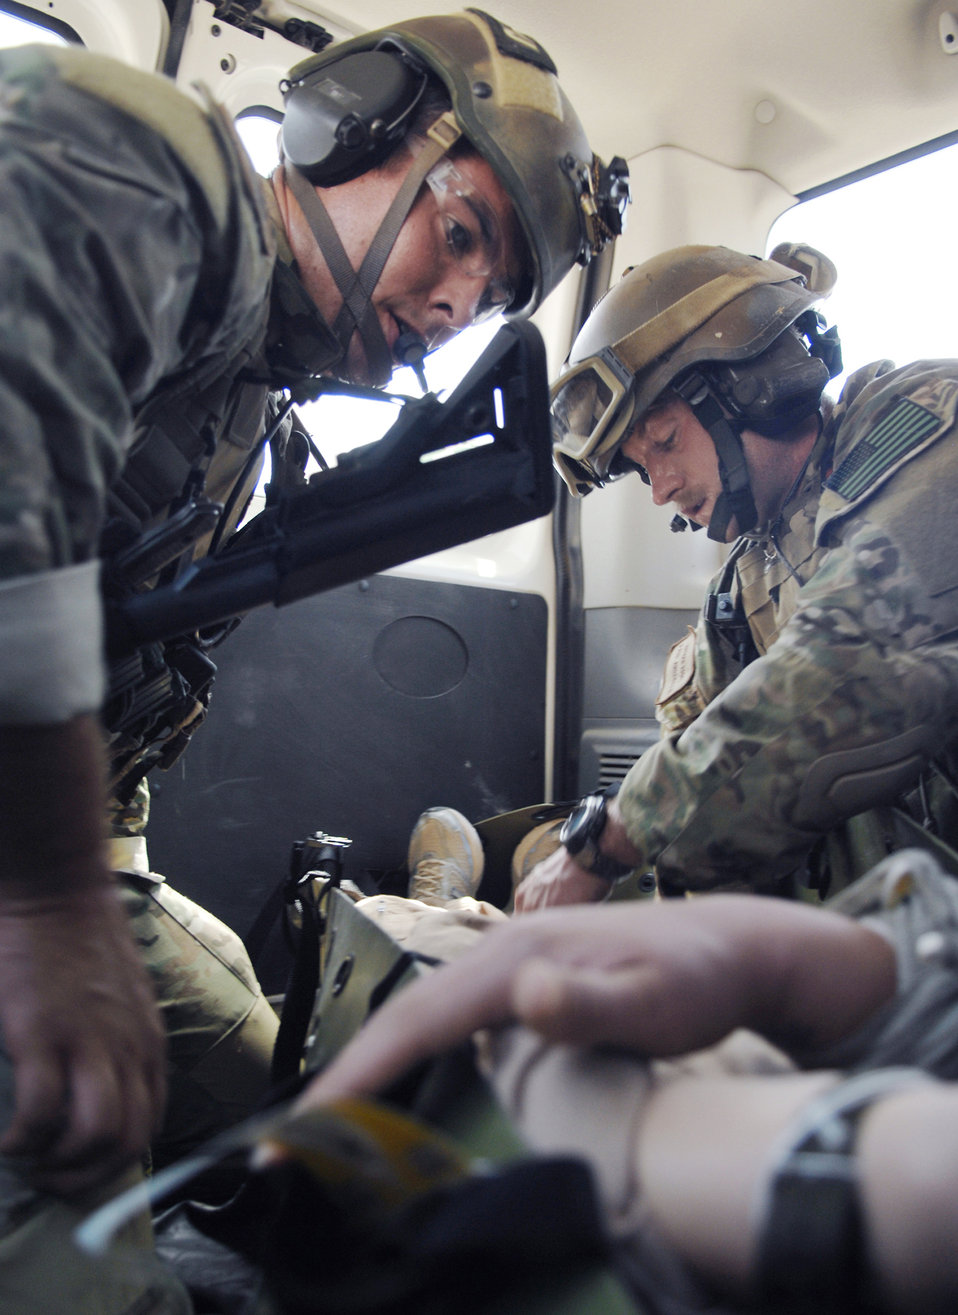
Pararescuemen train at Joint Base Balad

Senior Airman Nate Vogel (left) and Staff Sgt. Dean Criswell provide medical aid to a mock patient during a training exercise Aug. 2 at Joint Balad Base. Sergeant Criswell and Airman Vogel are pararescuemen assigned to the 64th Expeditionary Rescue Squadron. Along with their combat training, pararescuemen also undergo medical trauma training, fully qualifying them as paramedics.